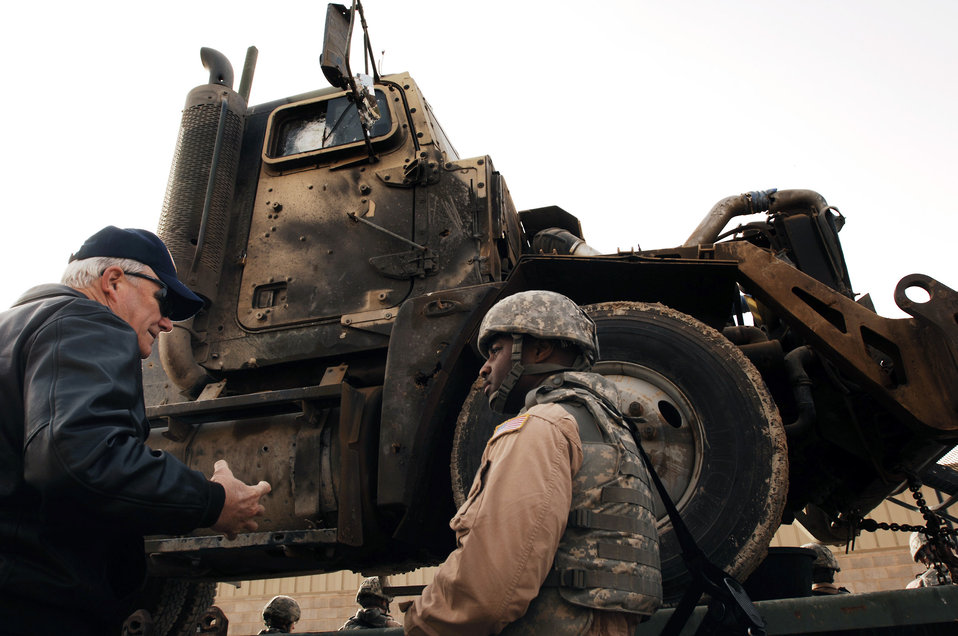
SECAF addresses Deployed Airmen

Master Sgt. Kory Hunter (left) briefs Secretary of the Air Force Michael Wynne about the damage done to a M915 semi-tractor trailer from an improvised explosive device during the SECAFs visit to Southwest Asia Feb. 1. The SECAF spoke with more than 400 Airmen during his visit and gained greater insight on the 6,800 plus Airmen deployed throughout Southwest Asia in non-traditional Air Force functions. Sergeant Hunter is a convoy commander from the 586th Expeditionary Logistics Readiness Squadron, 70th Medium Truck Detachment.